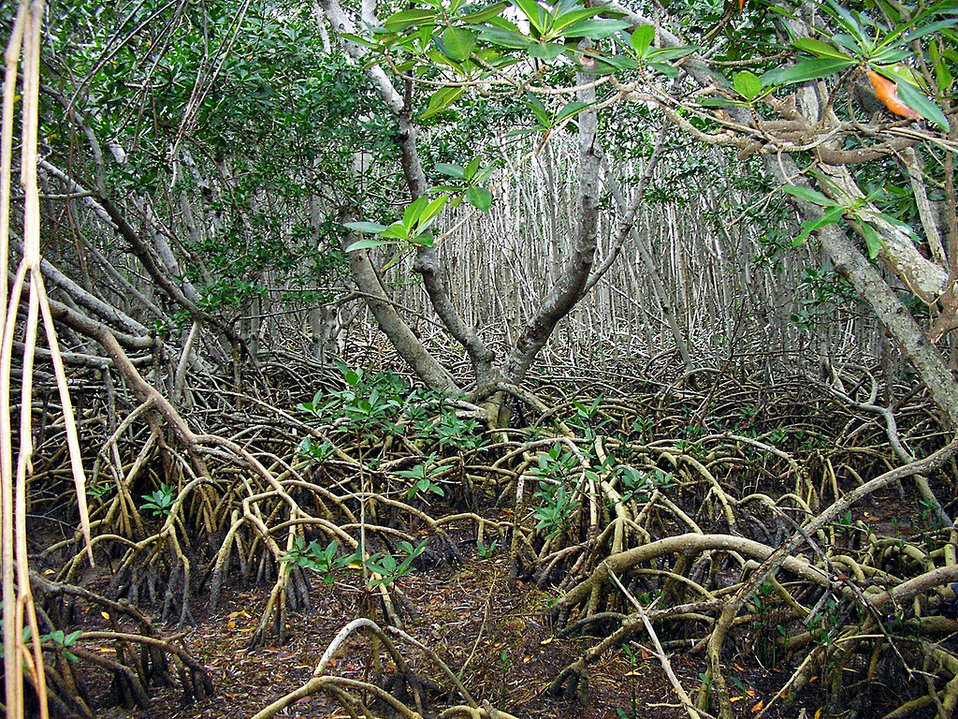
mangroves

Ohio Key
Florida Keys National Wildlife Refuge, FL